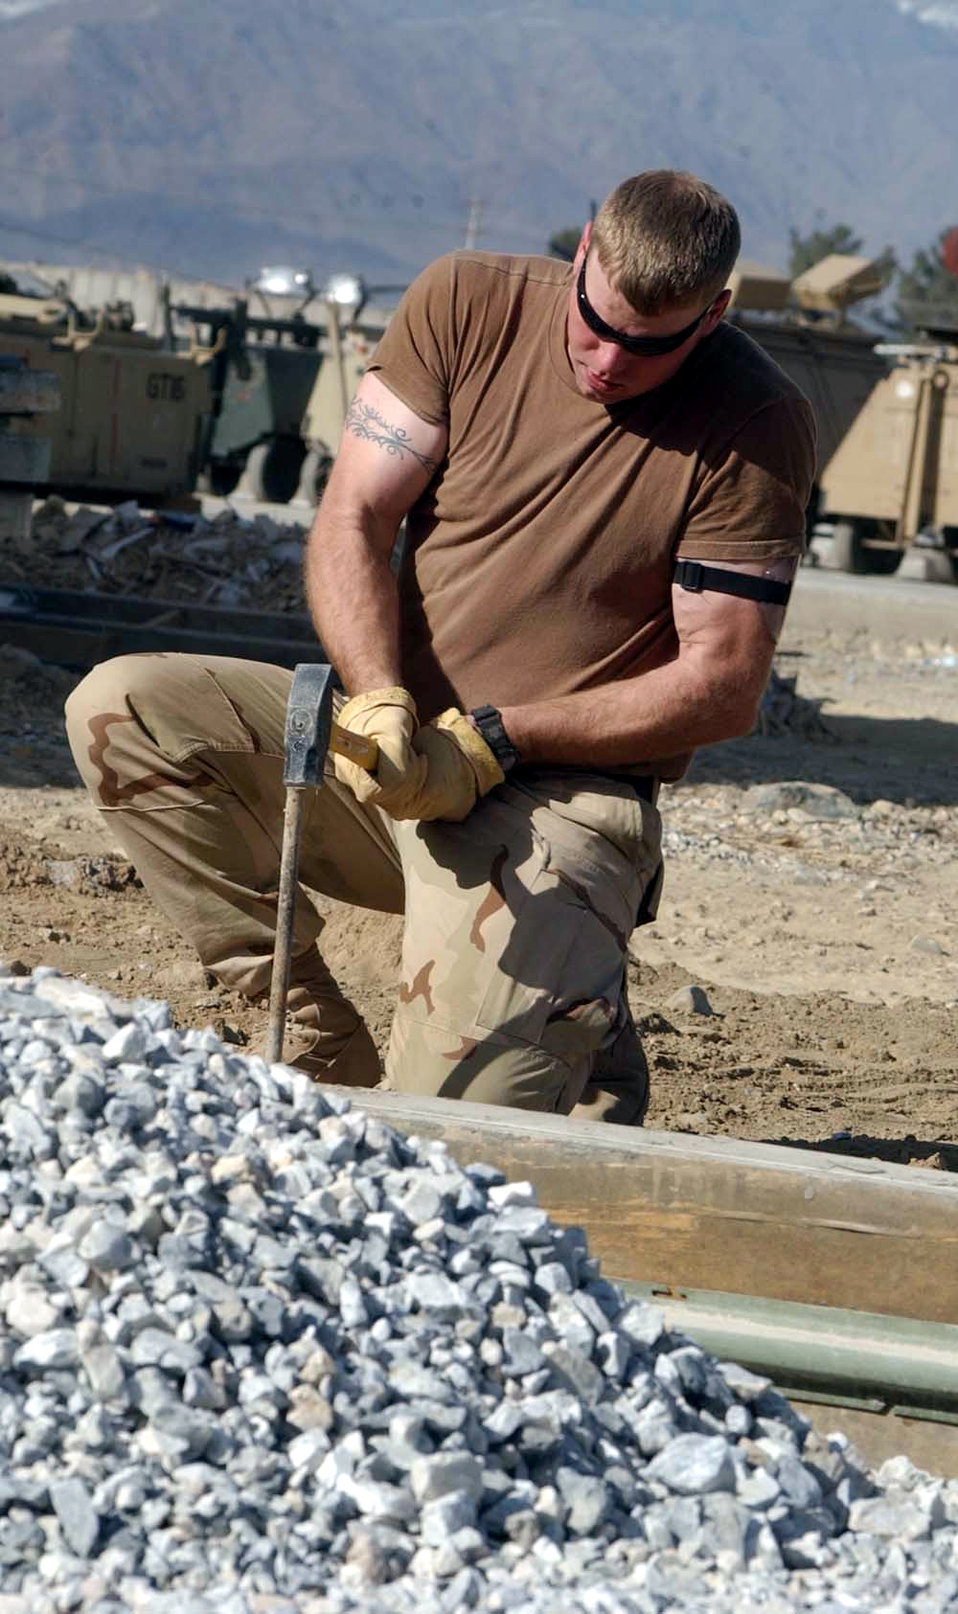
Building a better Bagram

BAGRAM AIR BASE, Afghanistan -- Staff Sgt. Scott Haas drives a stake during construction of a new A-10 Thunderbolt II maintenance building's concrete driveway. Sergeant Haas is a civil engineer with the 455th Expeditionary Operations Group, and he is deployed from Ellsworth Air Force Base, S.D.